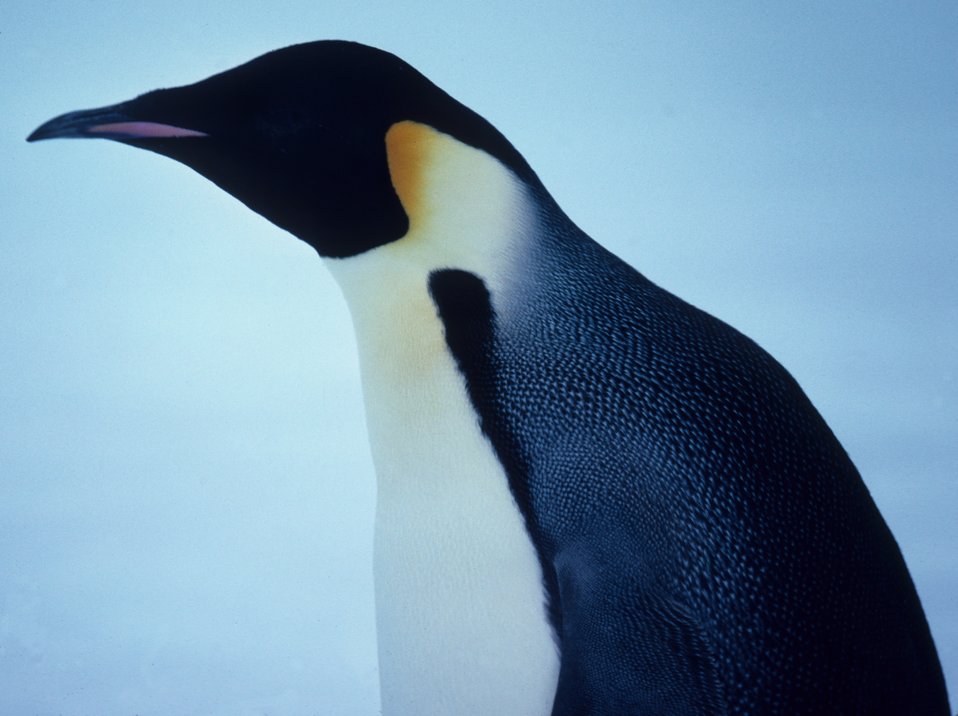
Emperor Penguin close up of head.